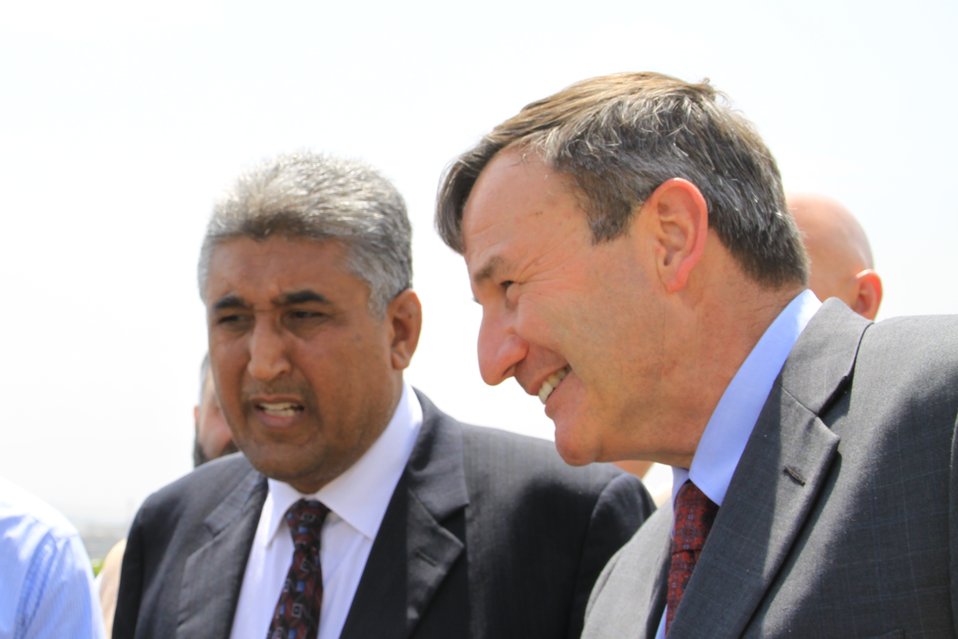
Badam Bagh Farm